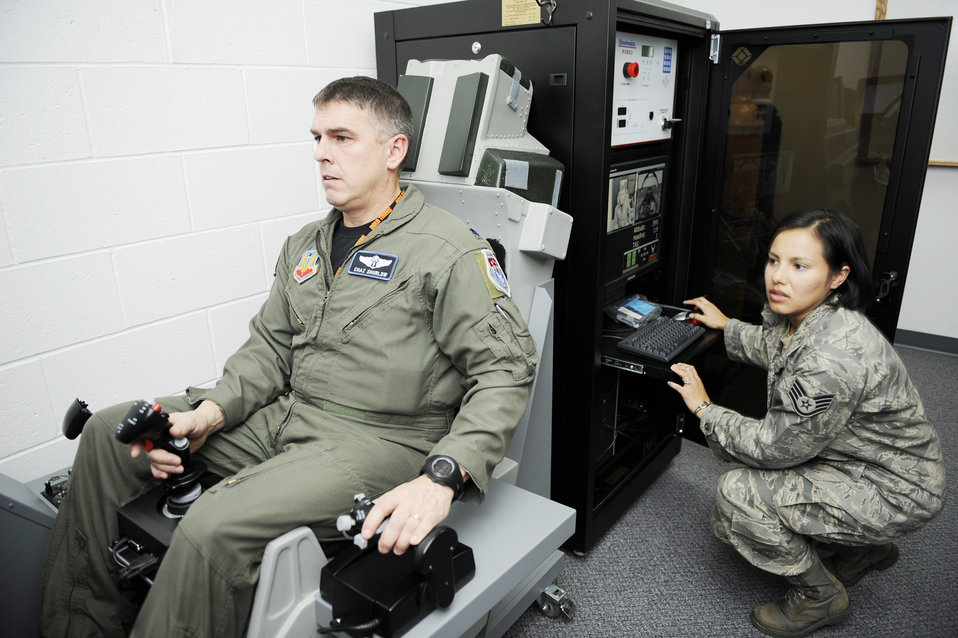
Mountain Home AFB receives hypoxia simulator

Staff Sgt. Maria Paucar resets the simulator-based hypoxia demonstrator for Lt. Col. Charles Shurlow, aerospace medicine chief for the 366th Aerospace Medicine Squadron, Dec. 16, 2009, at Mountain Home Air Force Base, Idaho. This simulator helps familiarize aircrews with hypoxia, an oxygen deficiency that causes impairment at high altitudes. Sergeant Paucar is an aerospace and operational physiology technician.